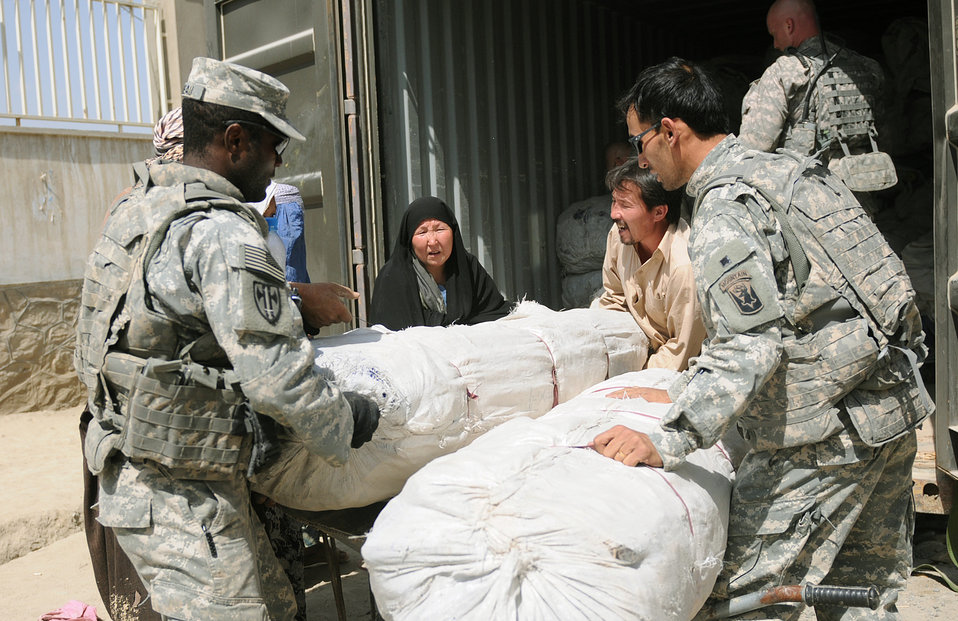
DOD ponders

Soldiers from the 1st Battalion, 101st Field Artillery Regiment of the Massachusetts Army National Guard assist a family with tents and food supplies during the delivery of humanitarian aid in the Dasht Barchi village of Kabul, Afghanistan, Sept. 23, 2010. Defense officials are working to determine the role going forward for the nation's reserve-component forces.